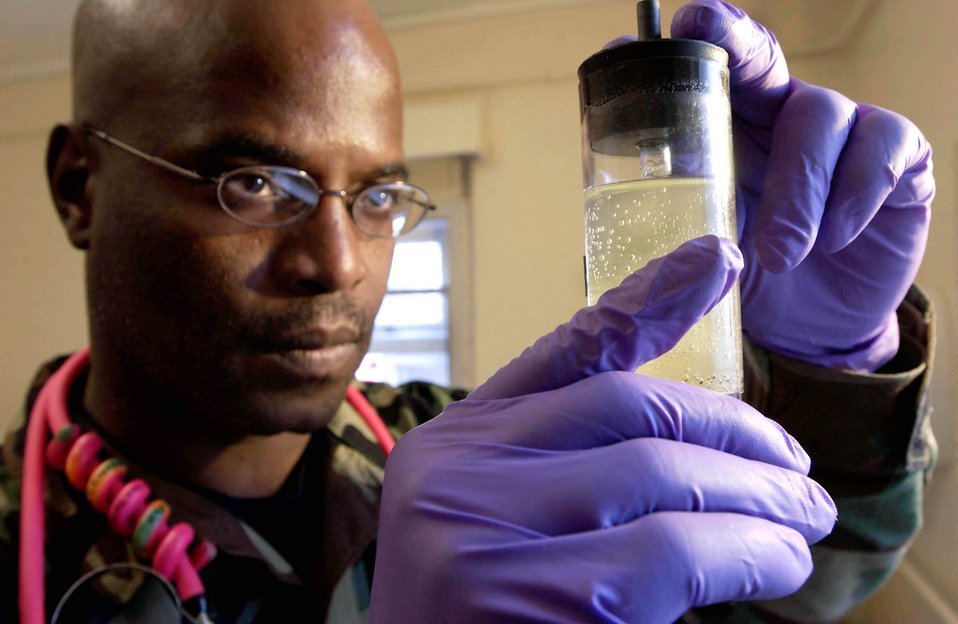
Water check

ROYAL AIR FORCE FAIRFORD, England (AFPN) -- Tech. Sgt. Gregory Beavers checks the water quality using an M-272 chemical agent testing kit. He is an independent-duty medical technician with the 424th Air Base Squadron here.